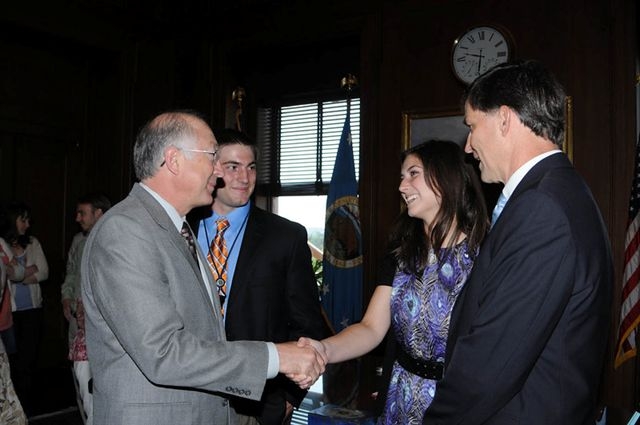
Dan Ashe Confirmed as 16th Director of U.S. Fish and Wildlife Service

Secretary Salazar greets the Ashe family.